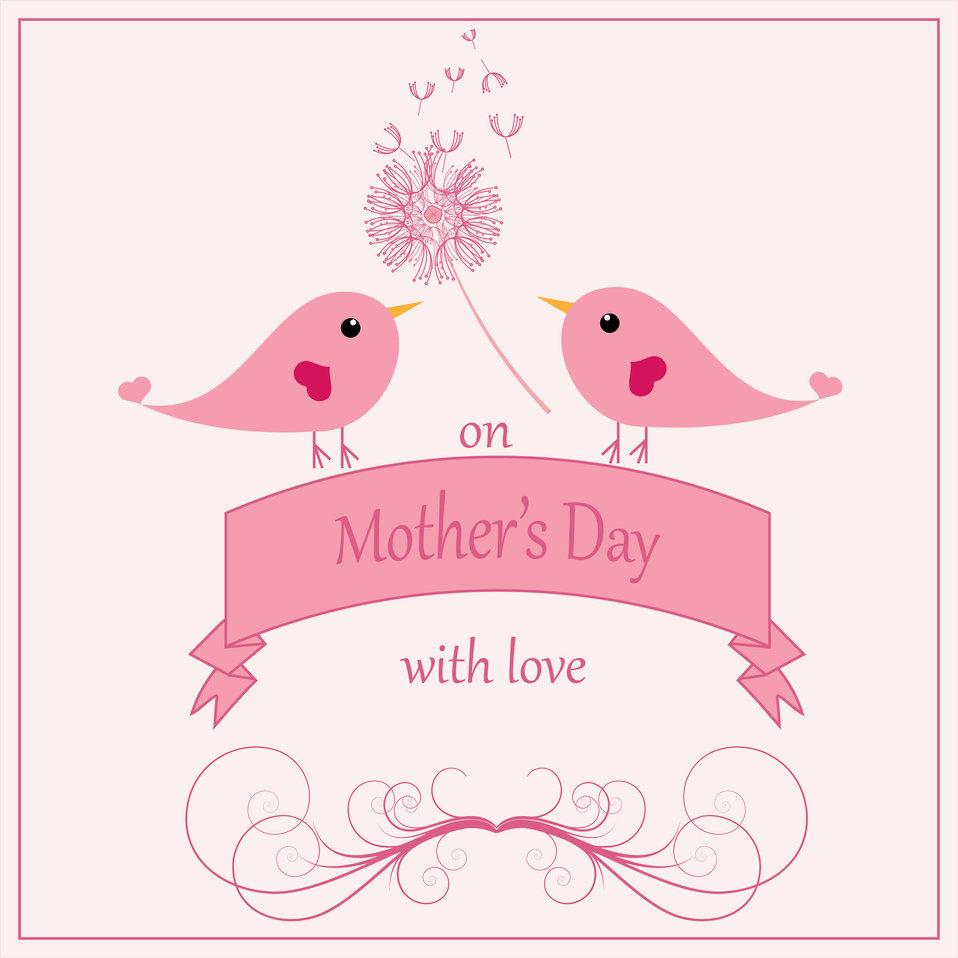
Mother's day card cute

Cute pink birds and dandelions mother's day card for scrapbooking.